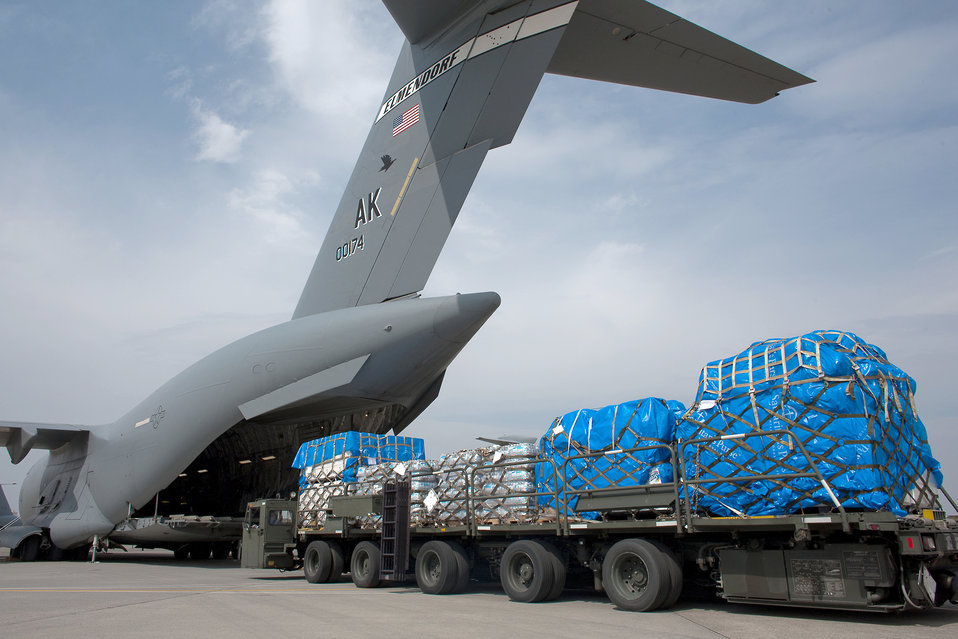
First C-17 touches down in Sendai

Members of the 730th Air Mobility Squadron load ten pallets of water, food and blankets onto a C-17 Globemaster III aircraft March 20, 2011, at Yokota Air Base, Japan. These were the first humanitarian relief supplies to be delivered to Sendai.